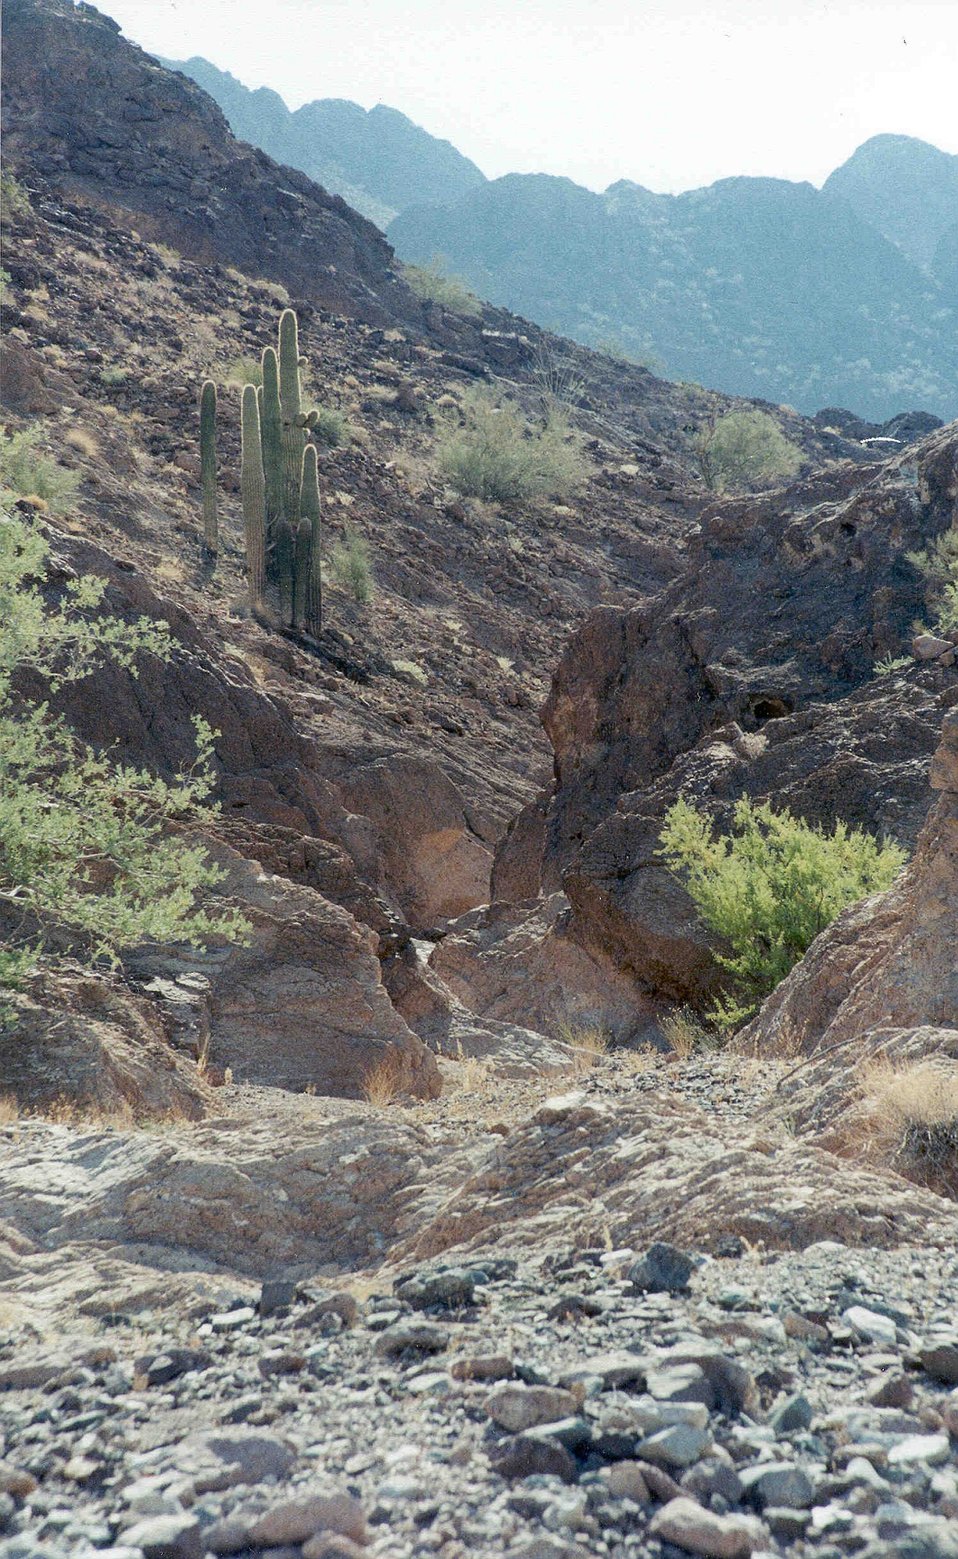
Majestic view in the Trigos Wilderness Area